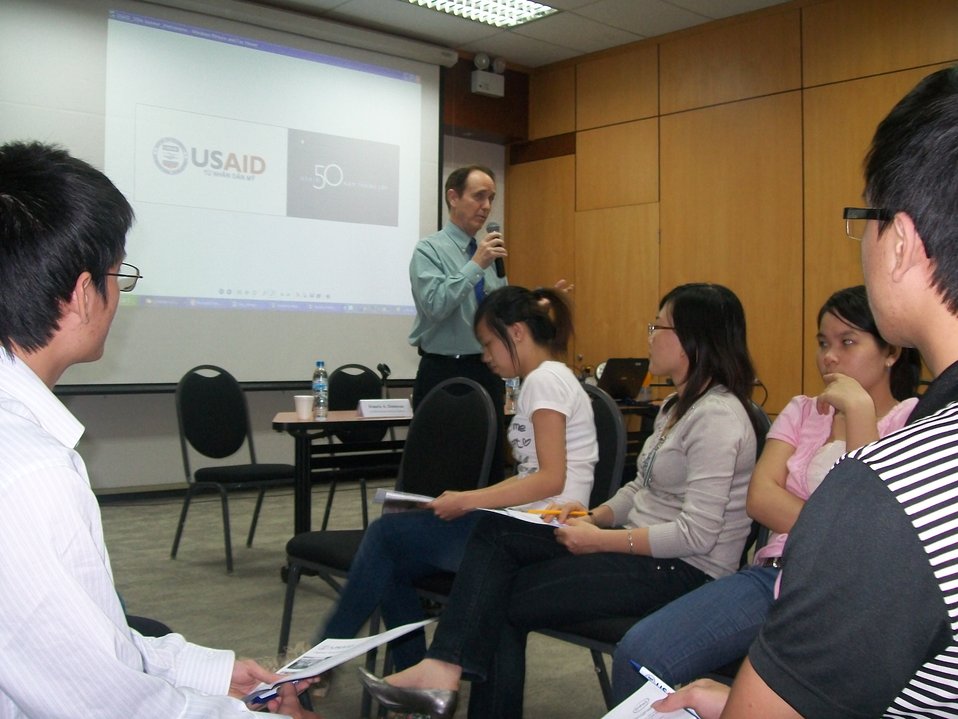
American Center and USAID host Debate Club on Higher Education

USAID/Vietnam Mission Director Francis Donovan address students and discusses the USAID-supported Higher Engineering Education Alliance Program with Arizona State University, Intel, and others.